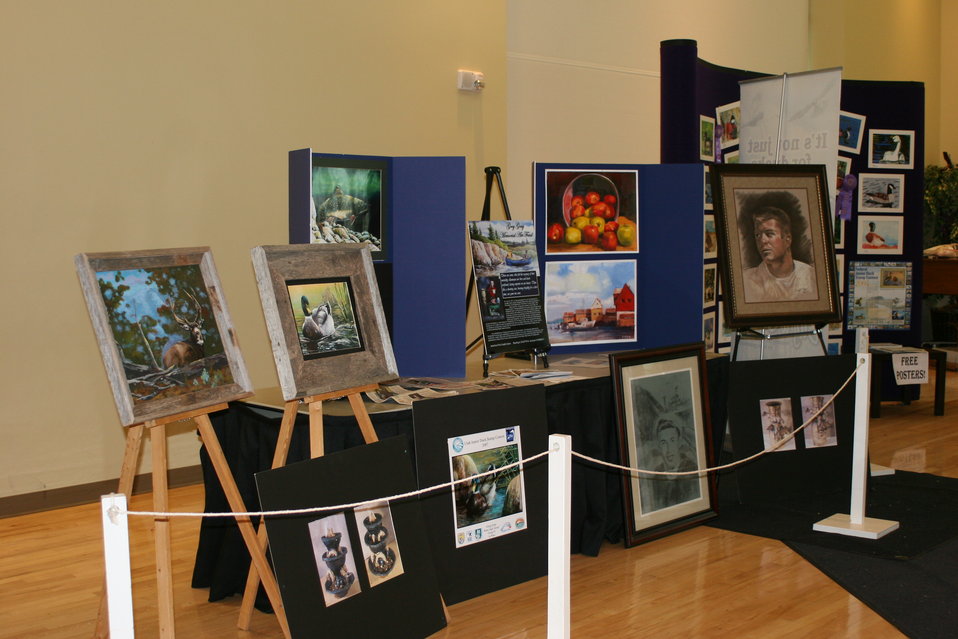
Outreach

Photo Credit: Suzanne Fellows / USFWS
The U.S. Fish & Wildlife Service sponsored the 2012 Federal Duck Stamp Art Contest September 28 and 29 in Ogden, Utah, at Weber State University. A panel of five judges was responsible for choosing the art work used to design the 2013-2014 Migratory Bird Hunting and Conservation Stamp.